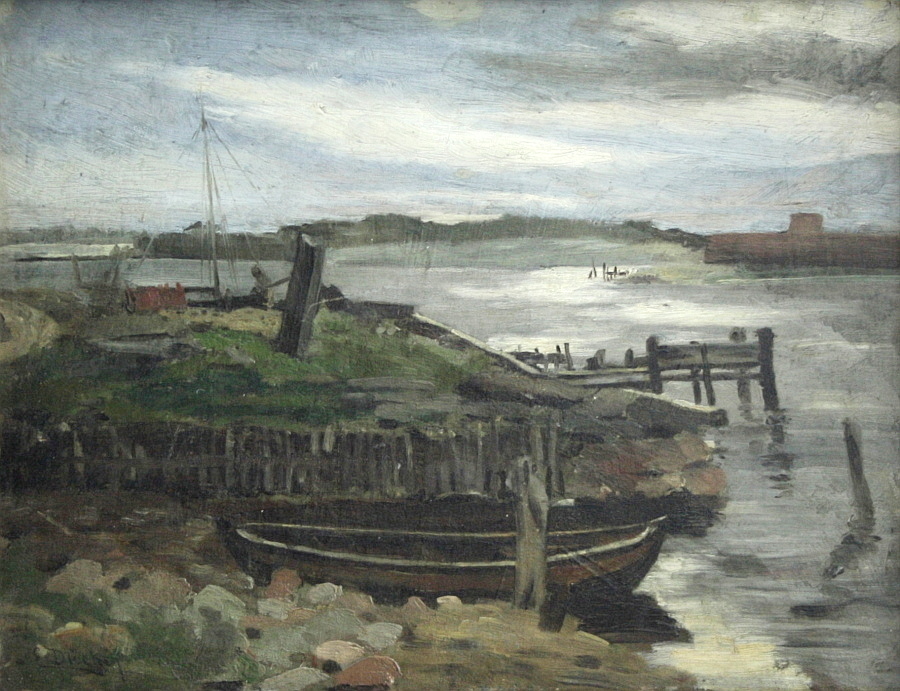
'Bewölkte Küstenlandschaft mit Fischerkähnen', Öl auf Leinwand, 27 x 34 cm, unten links handsigniert 'E. Dücker'